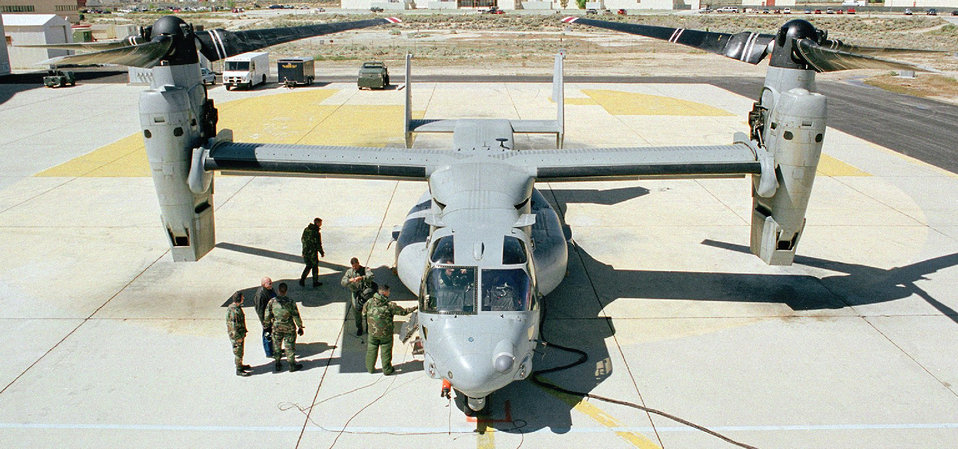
CV-22 reaches high point in history

EDWARDS AIR FORCE BASE, Calif. -- The CV-22 test program reached a high point in its flight test history when Osprey 7 successfully completed a terrain-following radar exercise here.